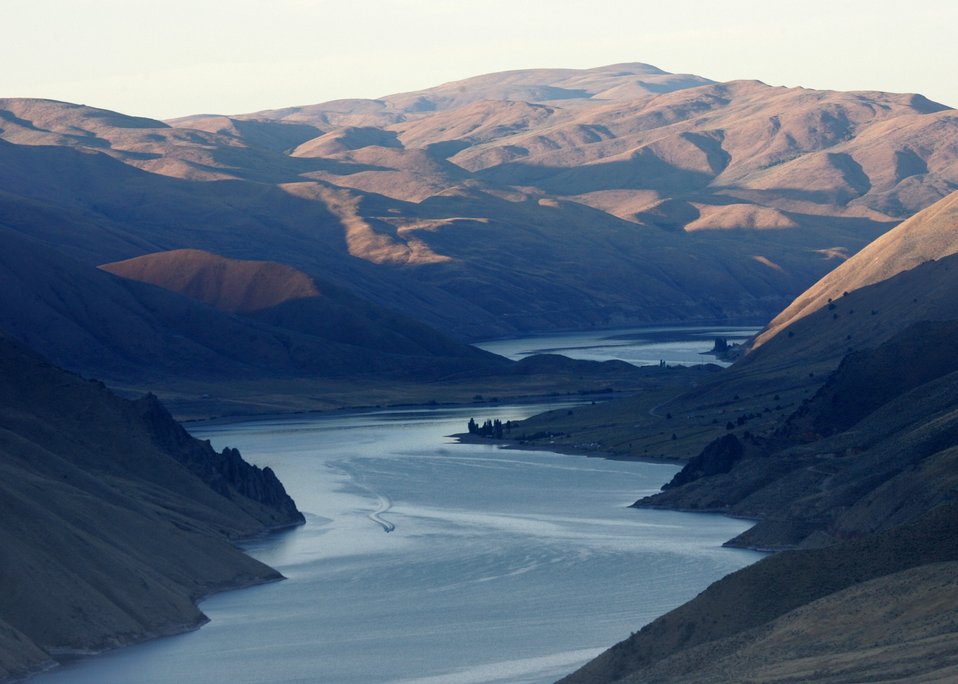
Sunrise on the Snake River Backcountry Byway.